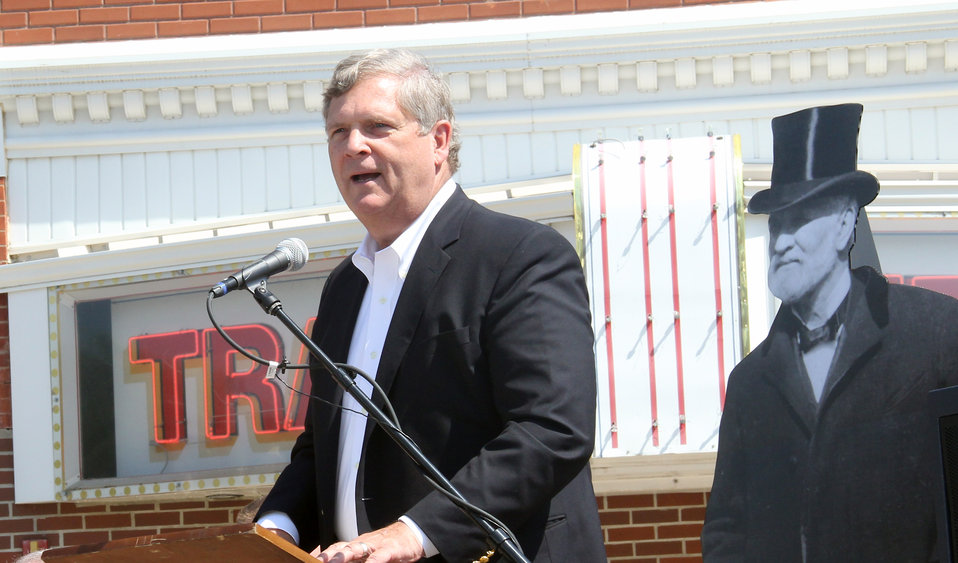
Agriculture Secretary Tom Vilsack makes remarks at the opening ceremony for the Traer Historical Museum exhibit honoring the longest serving cabinet member, former U.S. Agriculture Secretary James 'Tama Jim' Wilson. Wilson was Agriculture Secretary from 1897-1913 under Presidents McKinley, Roosevelt and Taft, at Traer Historical Museum, Traer, Iowa Traer, IA, on Saturday, Jul. 20, 2013.